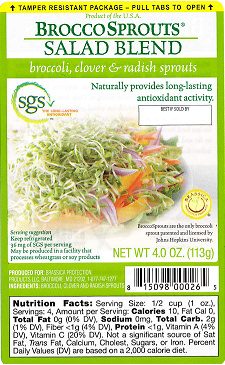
RECALLED - Sprouts

December 31, 2011 - RECALL Green Valley Food Corp. is Expanding Its Recall to Include Additional Products Because of a Possible Health Risk.